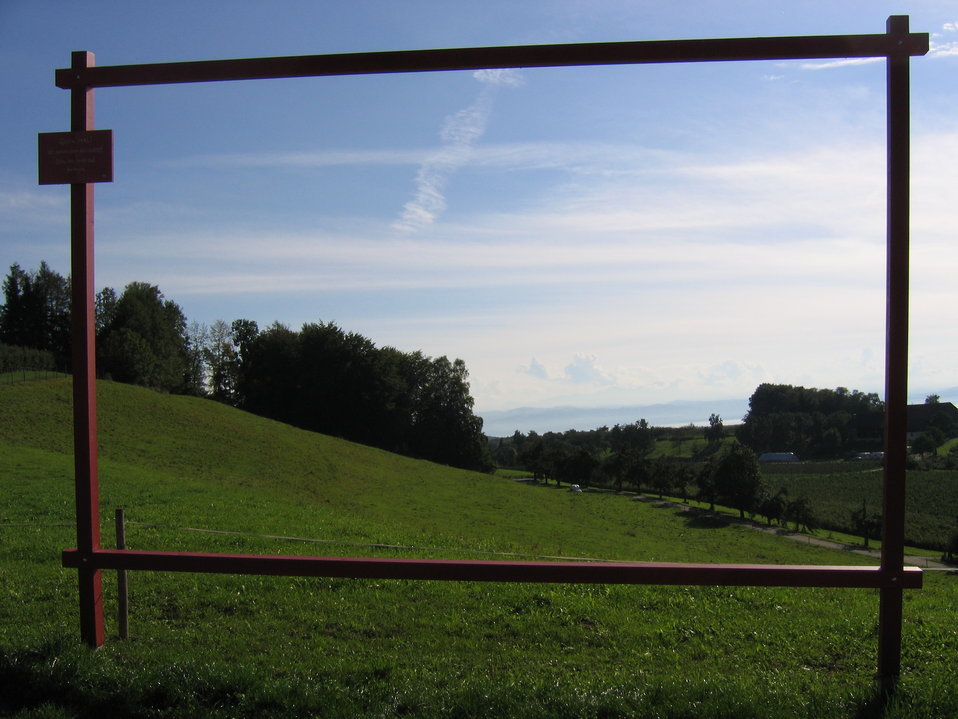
Deutsch: Deutschland - Baden-Württemberg - Bodenseekreis - Tettnang - Dieglishofen: Guck-mal-Rahmen